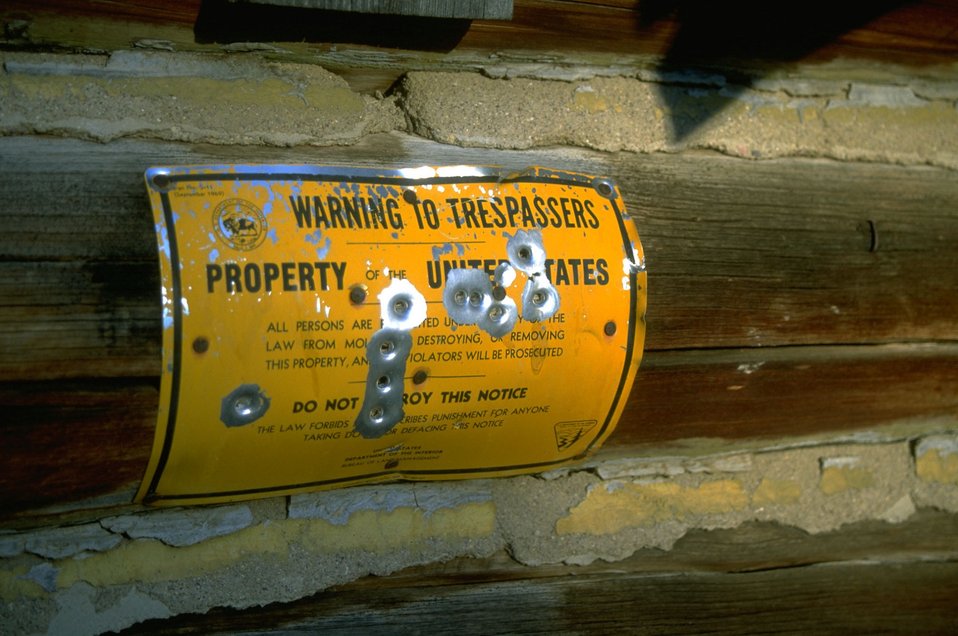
Garnet Back Country Byway--vandalized preservation sign